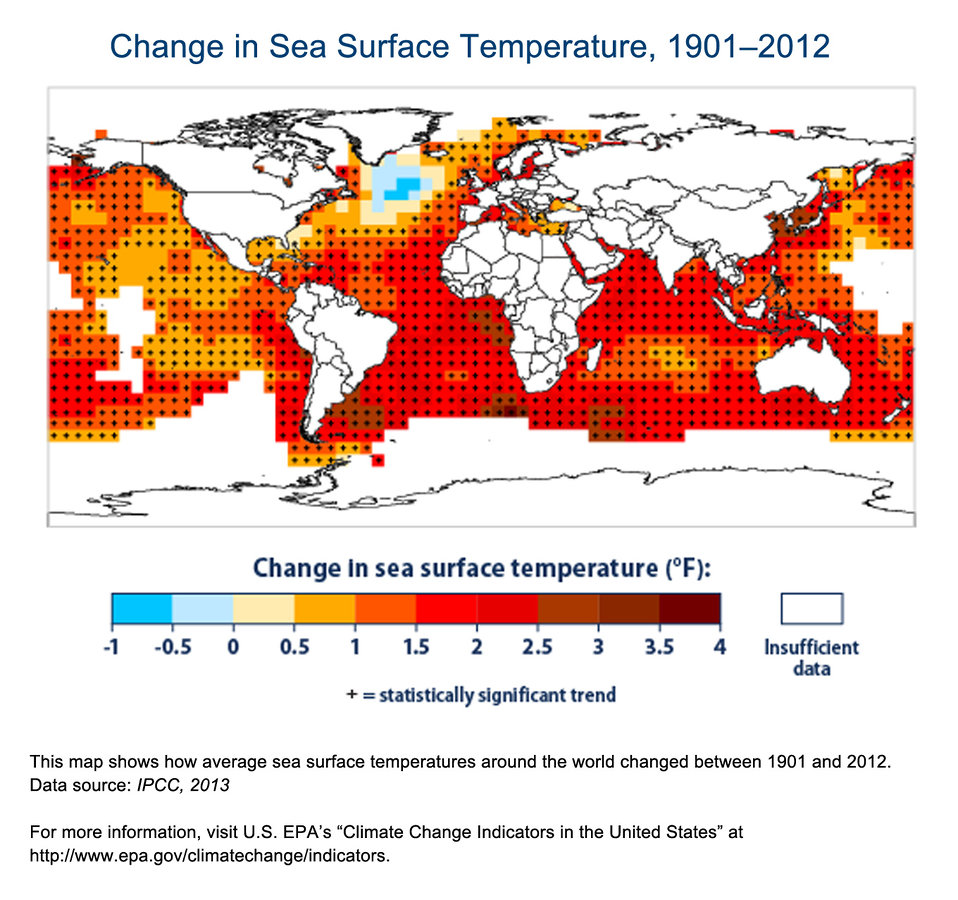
Sea surface temps were higher in the past 3 decades than any other time on record. go.usa.gov/8mcB @NOAA #ClimateChange